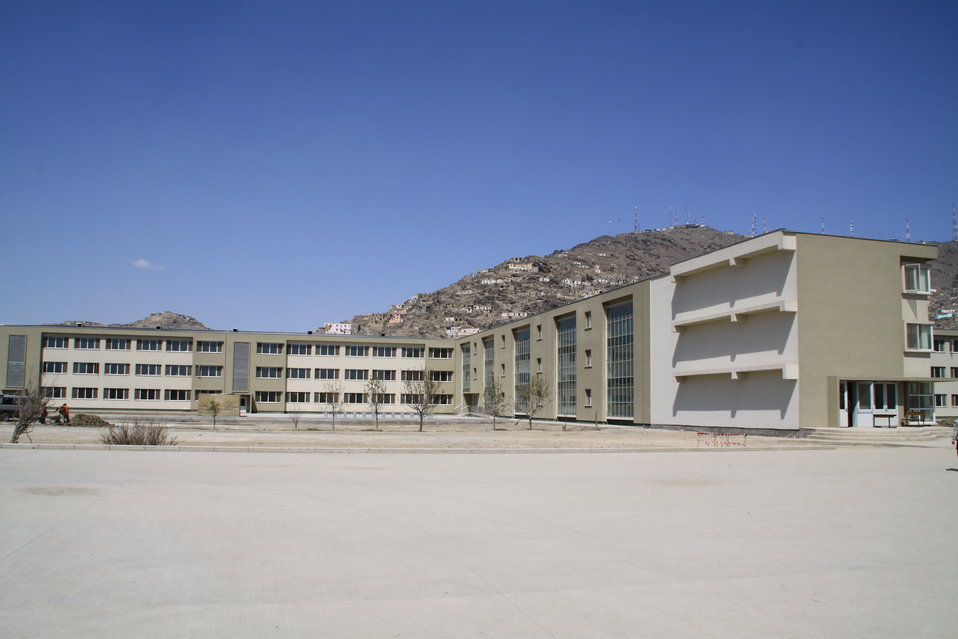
Ghazi high school , Kabul